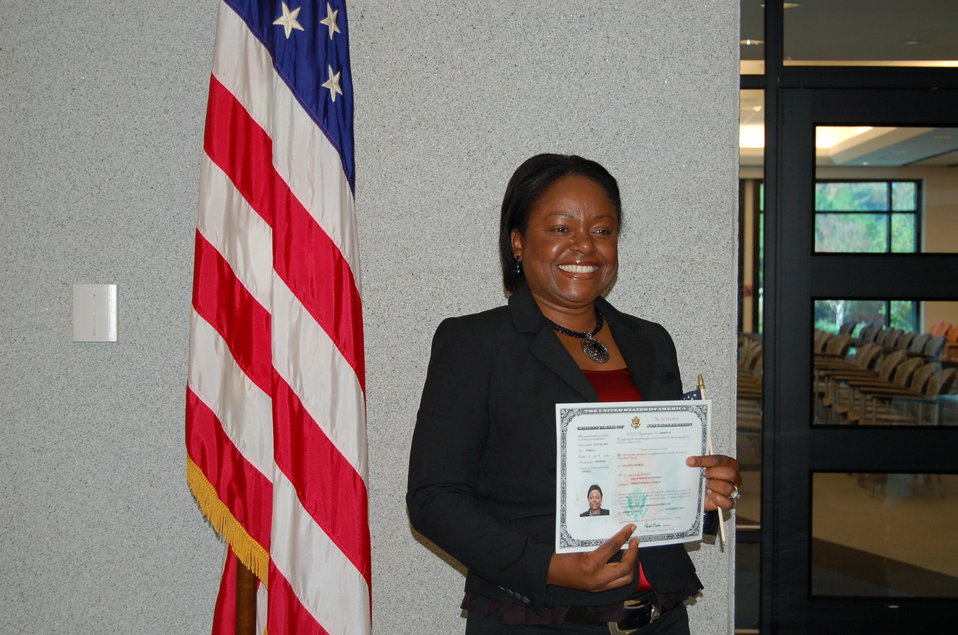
New Citizens